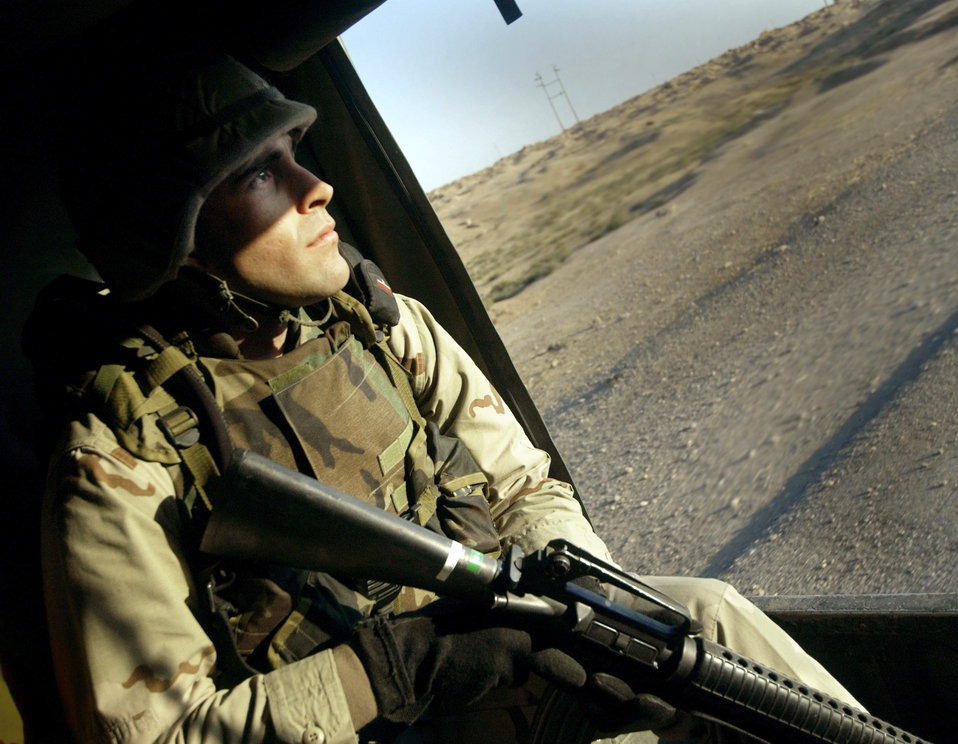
Iraqi Freedom

KIRKUK, Iraq -- First lt. Michael James mans a defensive position in the back of a Humvee as it speeds down an Iraqi street here, as part of Operation Ivy Cyclone, on Nov. 21.